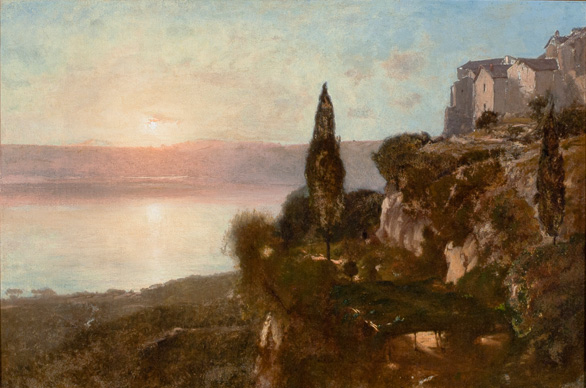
View on Lake Nemi, oil on canvas painting by George Inness, 1871, San Antonio Museum of Art